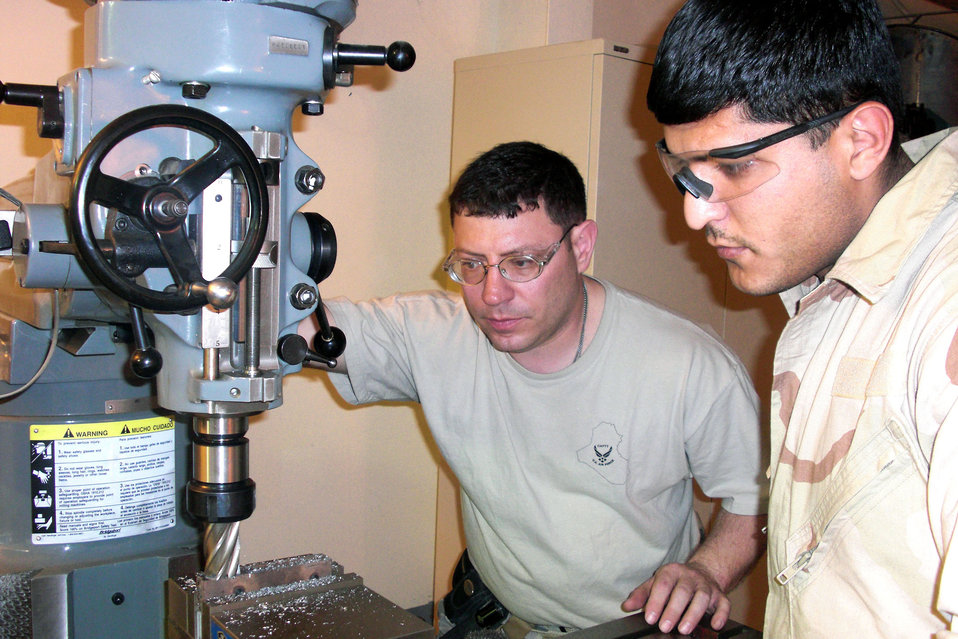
Training Iraqi maintainers

At Camp Taji, Iraq, Tech. Sgt. Jim Grifasi observes and instructs Iraqi machinist Ehab while he operates a milling machine to perform a C-130 Hercules wing inspection March 24. Sergeant Grisasi is a 321st Air Expeditionary Advisory Squadron metals technician adviser.